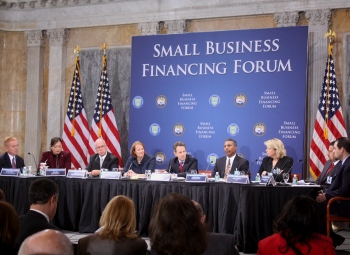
Treasury and SBA Host a Small Business Financing Forum

Small business owners from Arizona, California, Connecticut, Maryland, South Carolina, Virginia and Washington, D.C. discussed their success stories and challenges with Secretary Geithner and Administrator Mills.